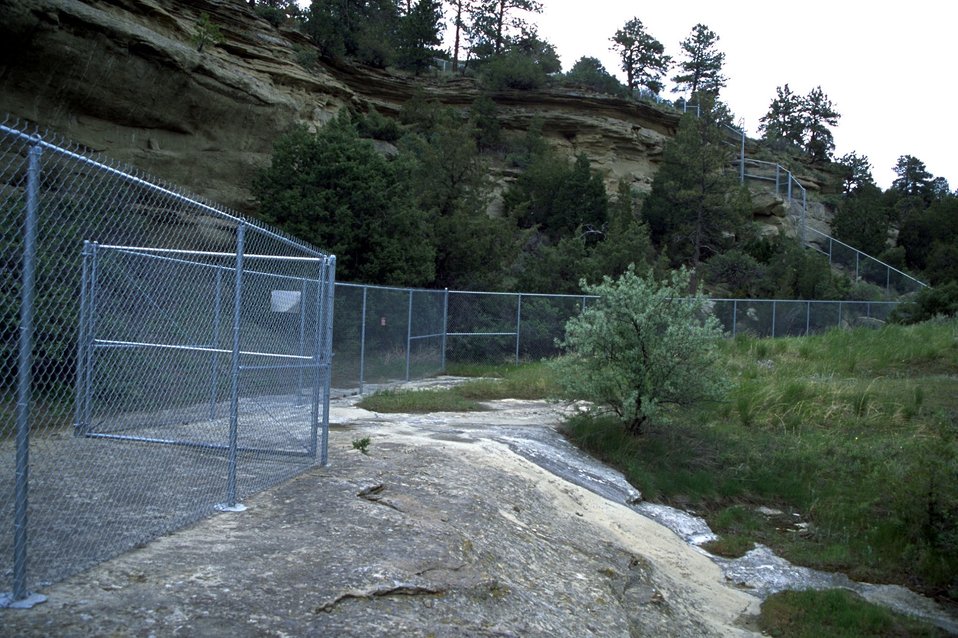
The deer exclusion fence on the Vince Larsen property